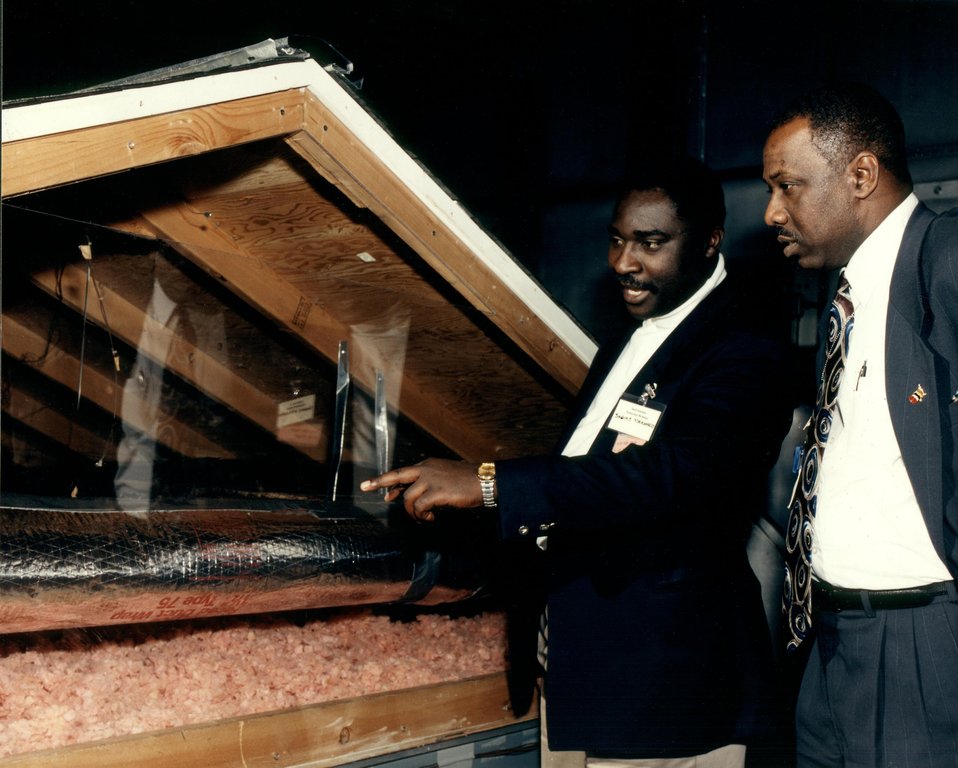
INSPECTING NEW INSULATION TECHNOLOGY AT ORNL'S CENTER FOR BUILDING TECHNOLOGY.